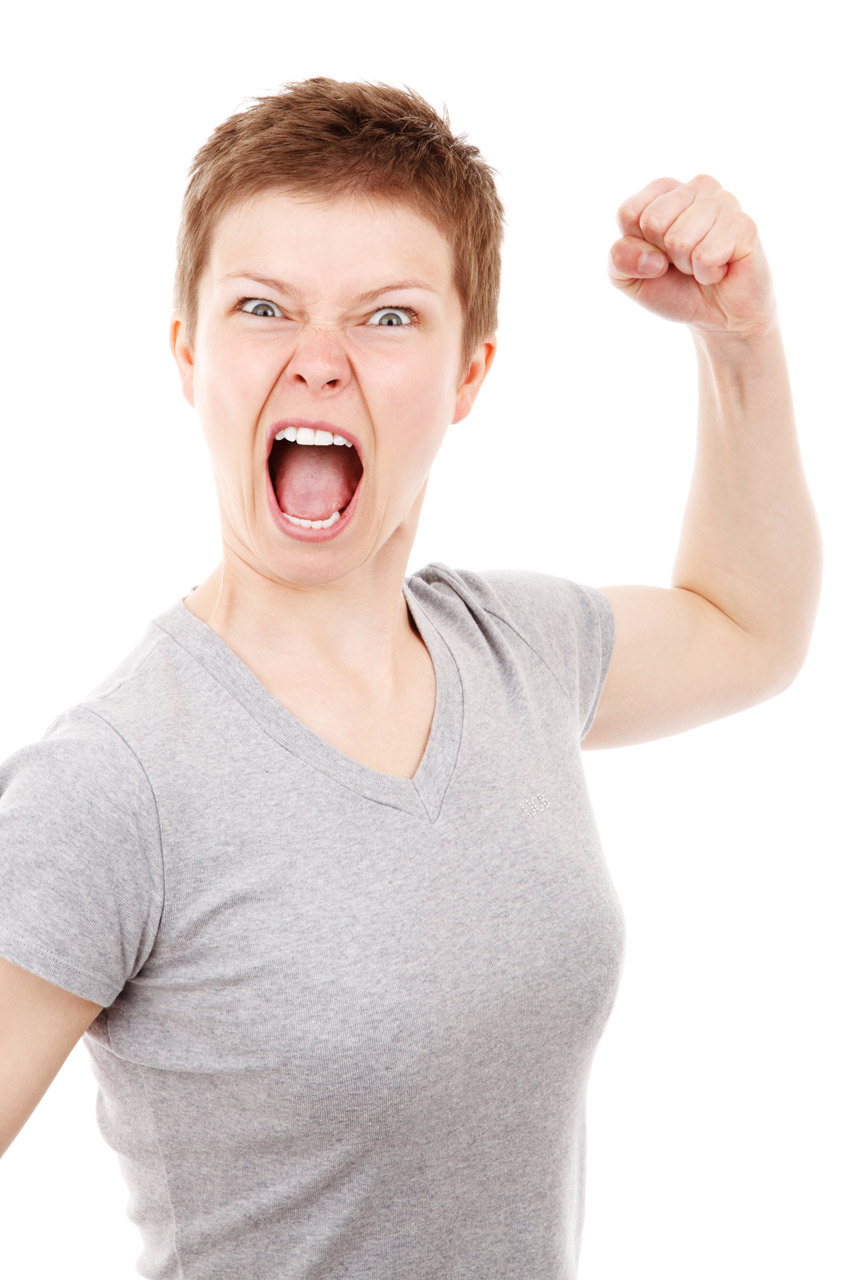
Angry woman

Angry young woman ready to punch isolated on white background.